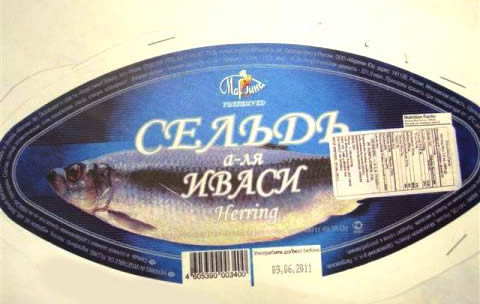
RECALLED - Herring

April 18, 2011 - Product Recall - Royal Sweet Bakery, Inc. Issues an Alert on Uneviscerated Fish.